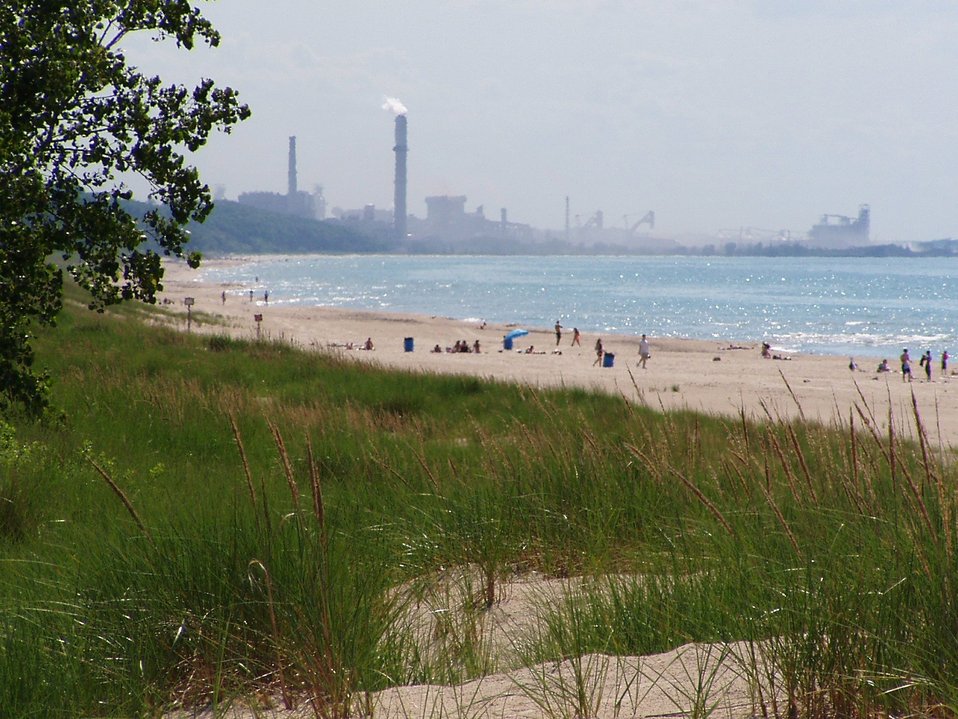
Indiana Dunes National Lakeshore